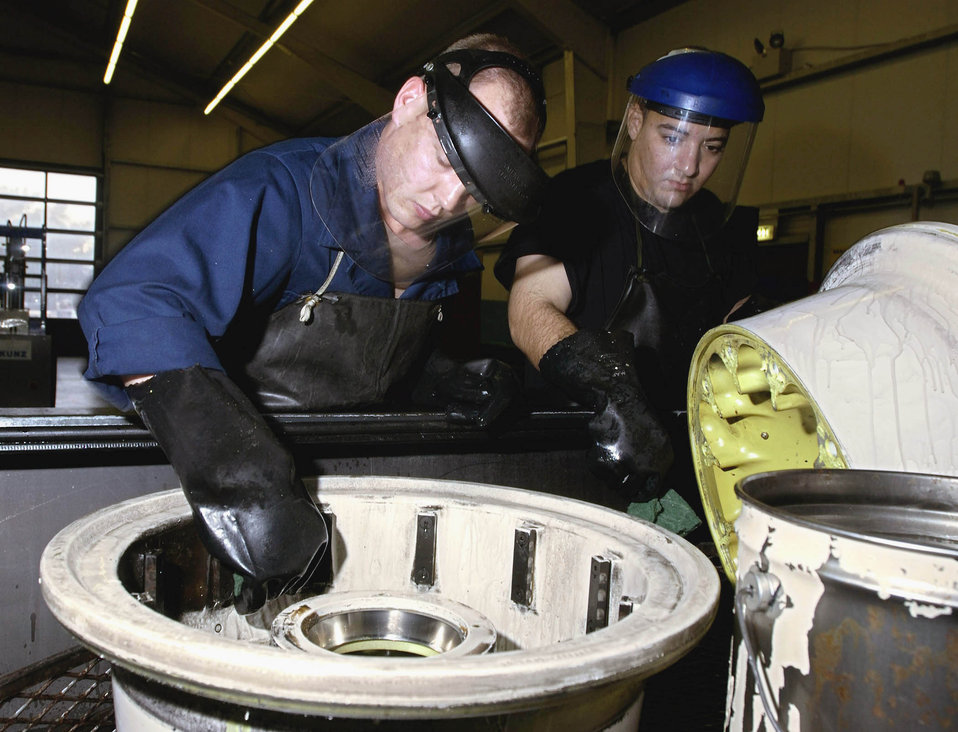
Feeling tired?

RAMSTEIN AIR BASE, Germany -- Senior Airman Adam Givens (left) and Staff Sgt. Juan Gonzalez remove dirt, brake dust and residual rubber from C-130 Hercules wheel halves at the 86th Maintenance Squadron's wheel and tire centralized intermediate repair facility here. They are serving a temporary duty here. Airman Givens is from the 374th Aircraft Maintenance Squadron at Yokota Air Base, Japan, and Sergeant Gonzalez is from the 355th AMXS at Davis-Monthan Air Force Base, Ariz.